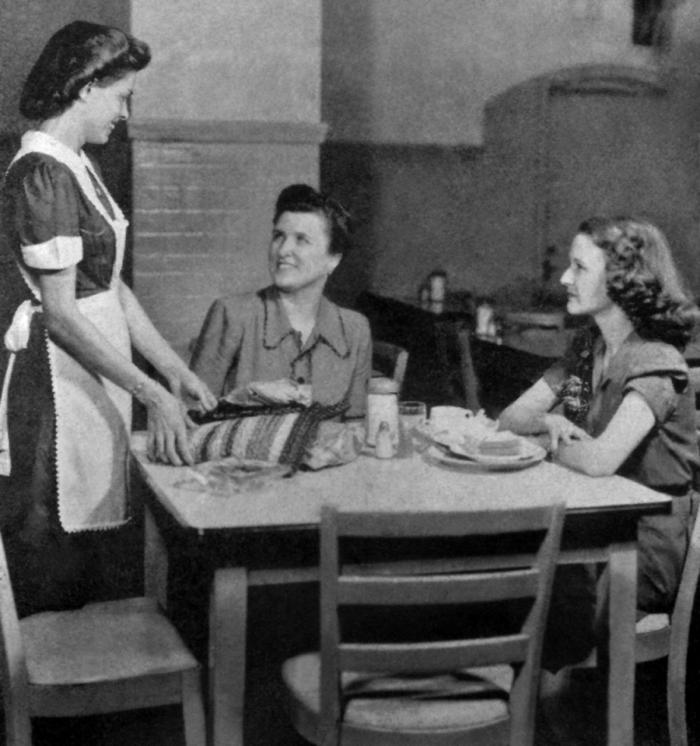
This historic 1950s image depicted a restaurant food server whose behavior is consistent with reducing the risk of transferring a communicable infection. The server was politely removing the customers' possessions from the table, in order to prevent contamination of food items. She is, thereby, minimizing the opportunity for disease transmission to the customers.